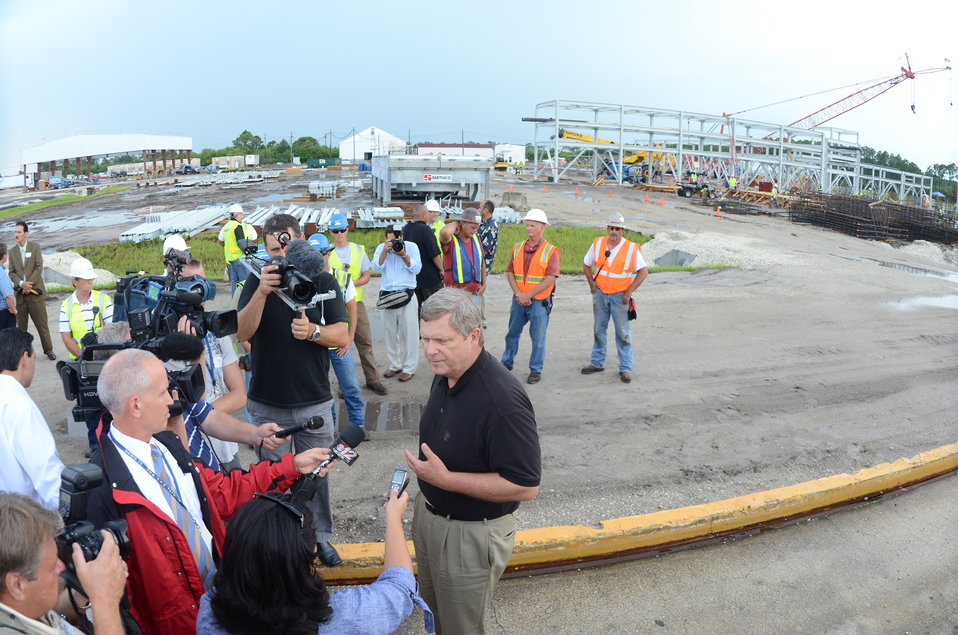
Agriculture Secretary Tom Vilsack visited the waste-to-energy bioprocessing facility under construction in Florida today to announce several small grants to support research into renewable fuels. The INEOS New Planed BioEnergy facility in Vero Beach, Florida, was granted a conditional Agriculture loan guarantee earlier this year to help build and operate a biorefinery capable of producing 8 million gallons per year of cellulosic ethanol and 6 megawatts of electricity.